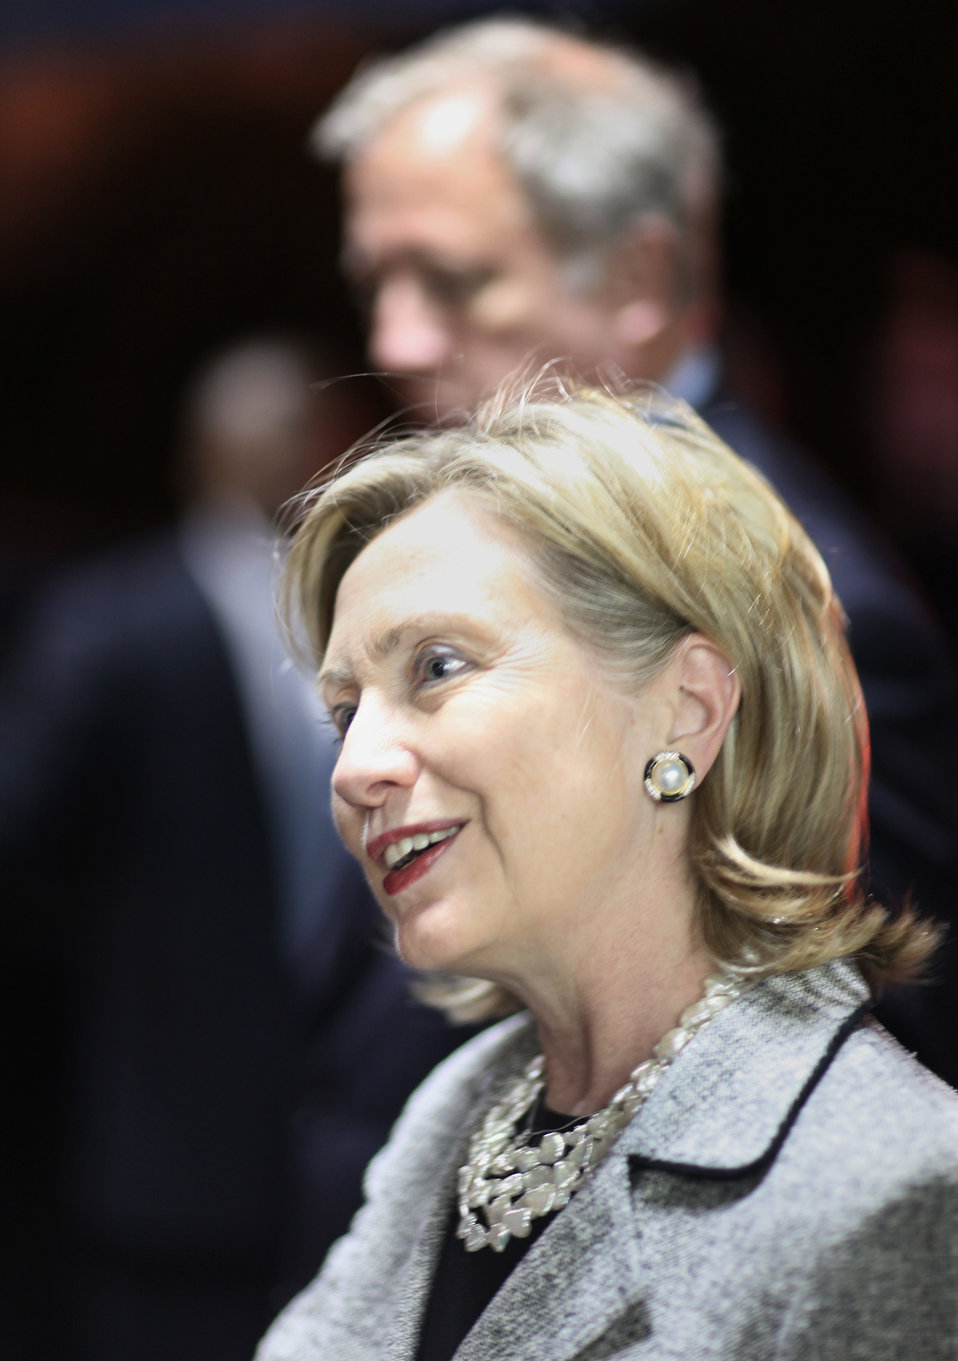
Secretary Clinton Speaks With Ambassador Shannon

U.S. Secretary of State Hillary Rodham Clinton speaks with U.S. Ambassador to Brazil Thomas Shannon in Brasilia, Brazil March 3, 2010.